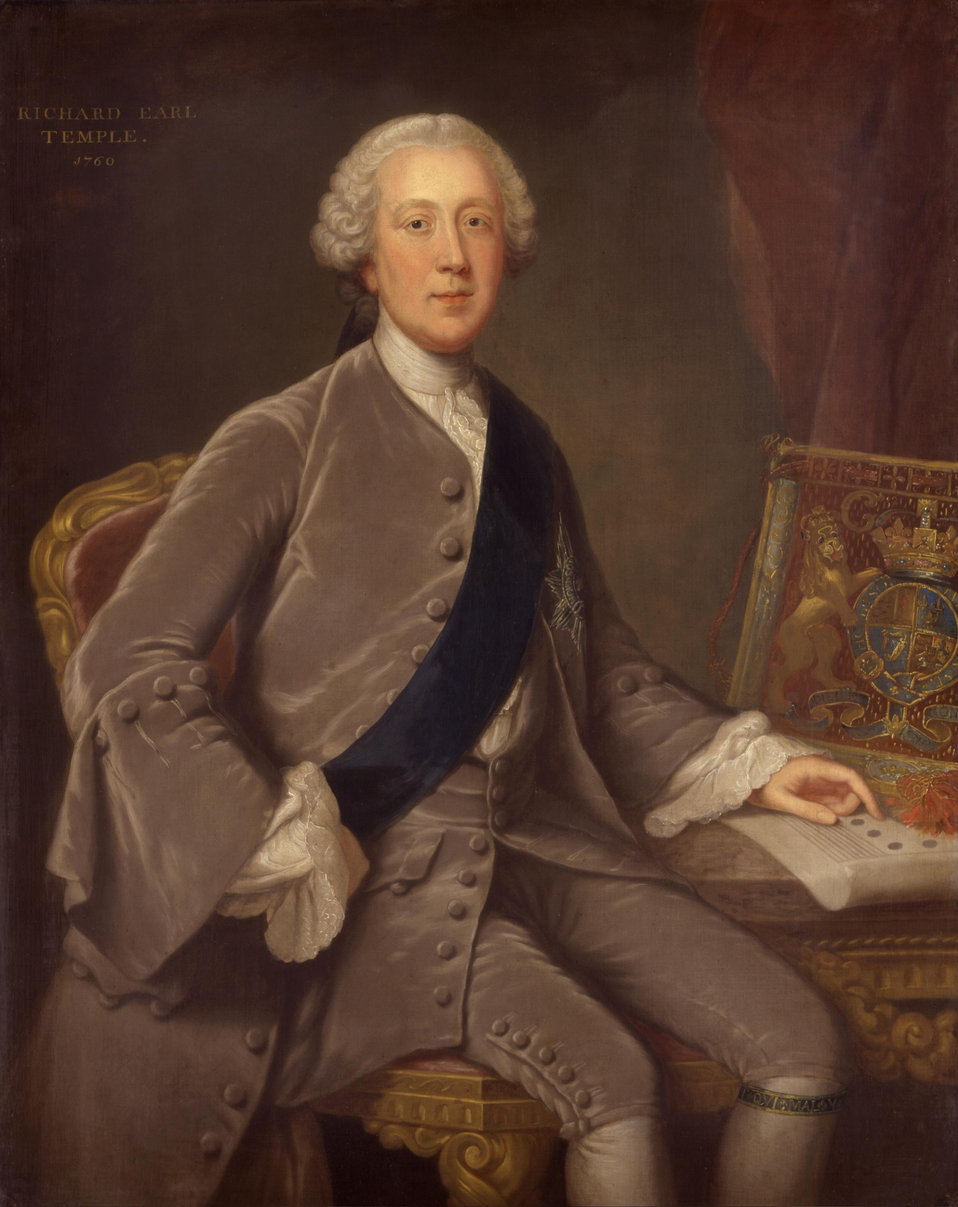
Richard Grenville-Temple, 2nd Earl Temple by William Hoare